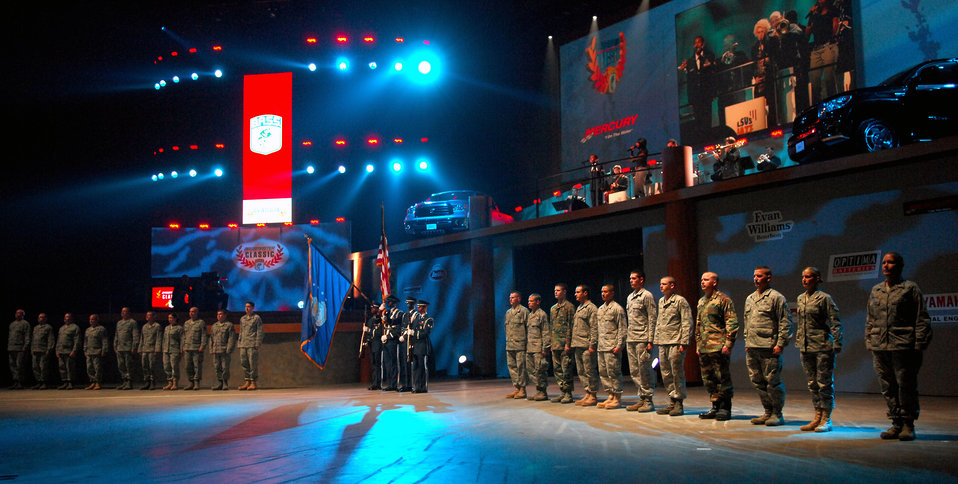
Airmen participate in 2009 ESPN Bassmaster Classic

Airmen from Barksdale Air Force Base, La., stand on stage with the Barksdale honor guard during the opening ceremonies of the day one weigh in for the 2009 ESPN Bassmaster Classic Feb. 19 in Bossier City, La.